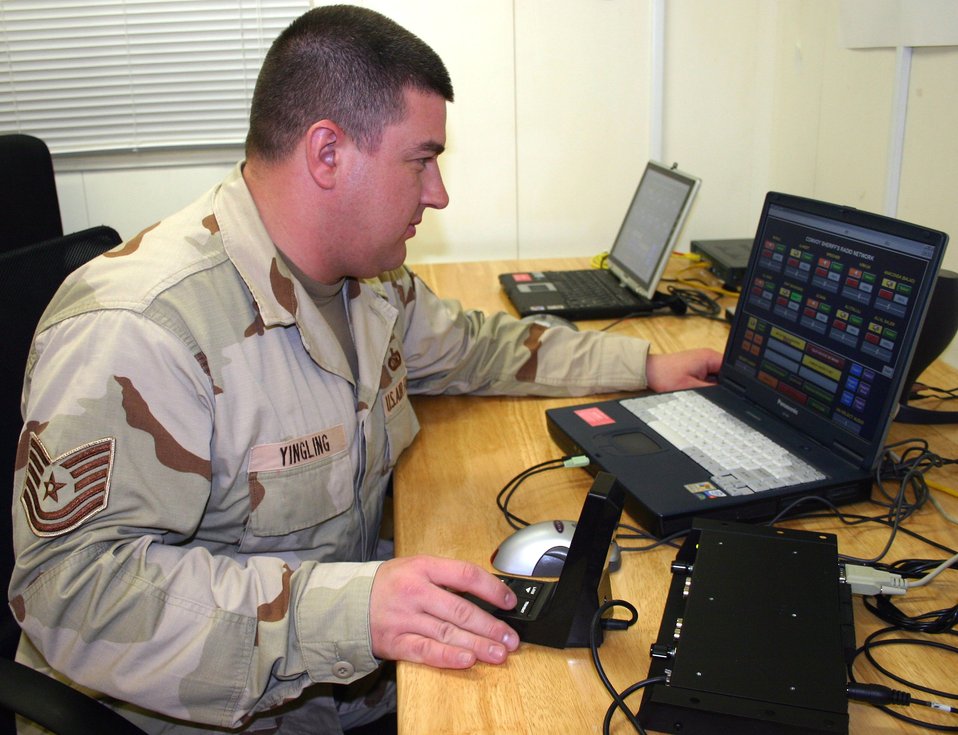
New radio technology keeps troops in touch

Tech. Sgt. Eric Yingling, communications engineer at the Combined Air Operations Center, uses a